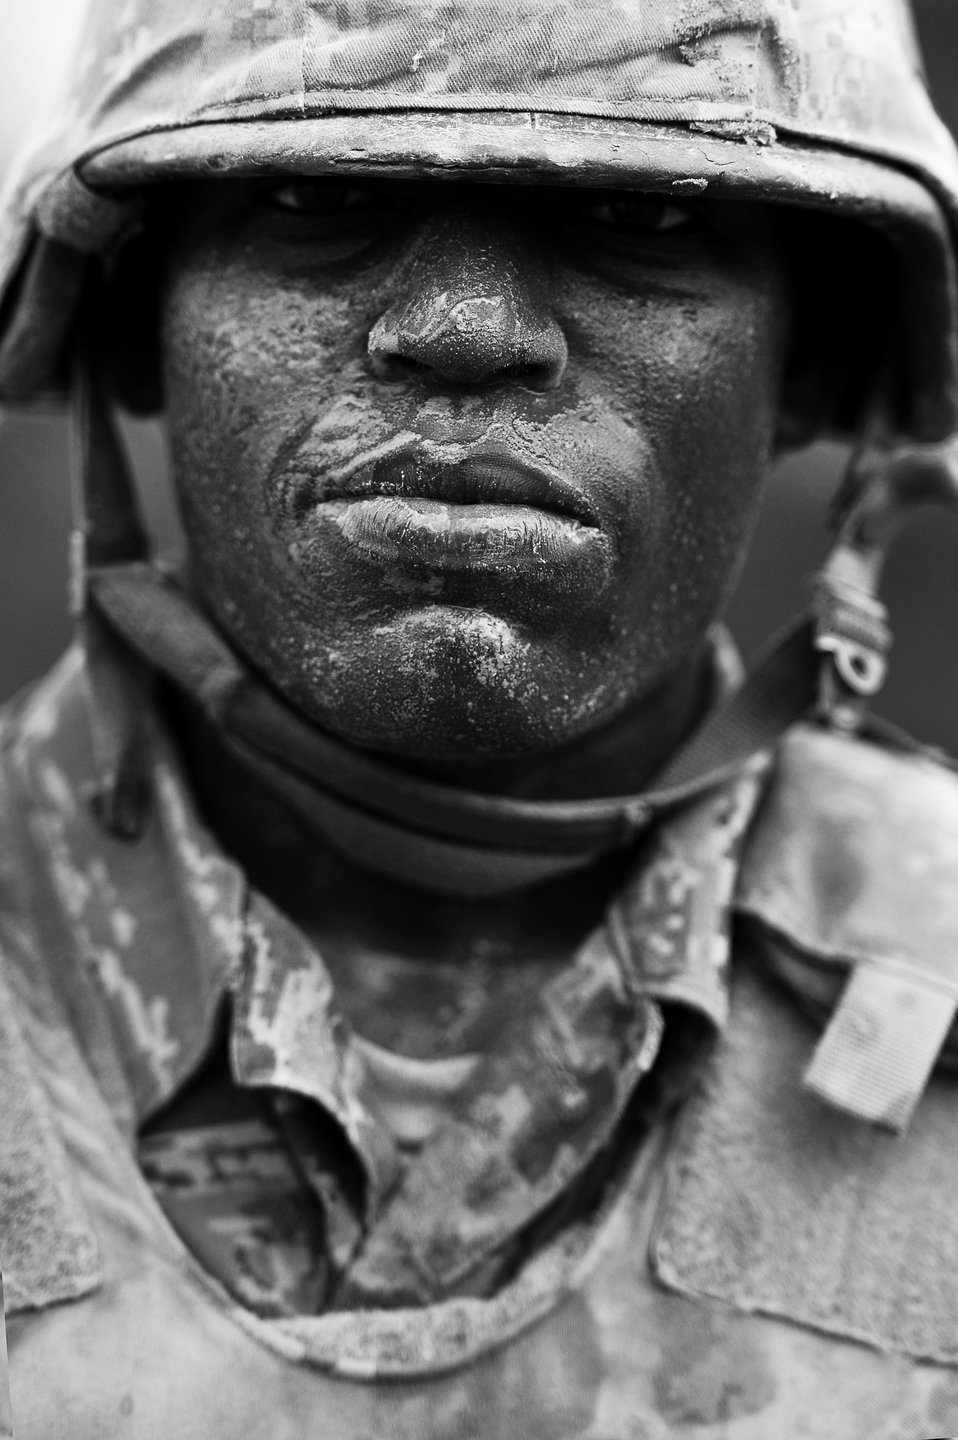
BEAST

Basic trainees go through their sixth week of Air Force basic military training at the Basic Expeditionary Airman Skills Training on May 25, 2011, at Lackland Air Force Base, Texas.